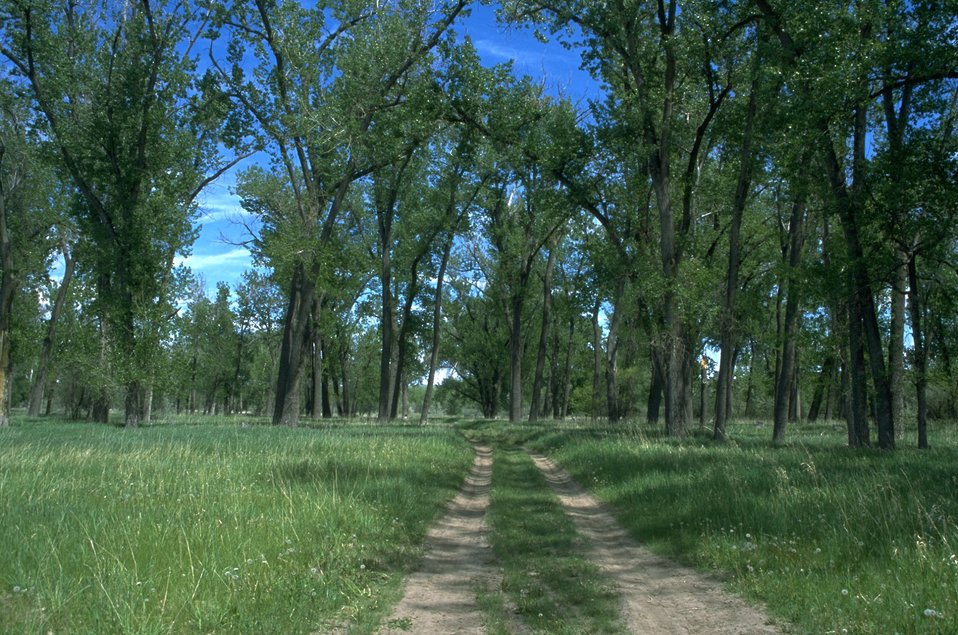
Cottonwood tree grove east of Sunndance Lodge parking lot along the Clark's Fork of the Yellowstone River